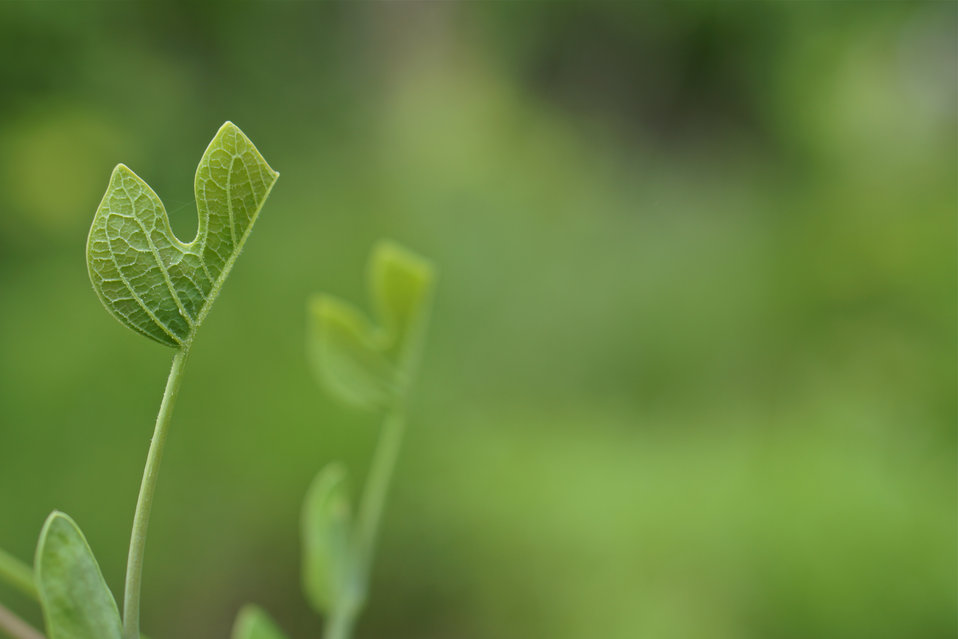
Young poplar leaves

In May, bog conservationists from Tennessee, North Carolina, and Georgia convened in the north Georgia mountains for the spring, 2014 meeting of the Bog Learning Network. The event provided an opportunity for biologists to see, first hand, the result of management efforts at two north Georgia bogs. More importantly, the outings provided an opportunity to share innovative approaches to bog management, such as the role of the Georgia Plant Conservation Alliance in conserving rare plants and coordinating a cadre of volunteers to work on bog management.

The Bog Learning Network was convened in the winter of 2013 as a way to bring together people working for bog conservation across the Southern Appalachians. Southern Appalachian bogs are one of North America’s rarest habitats and home to many rare plants and animals.